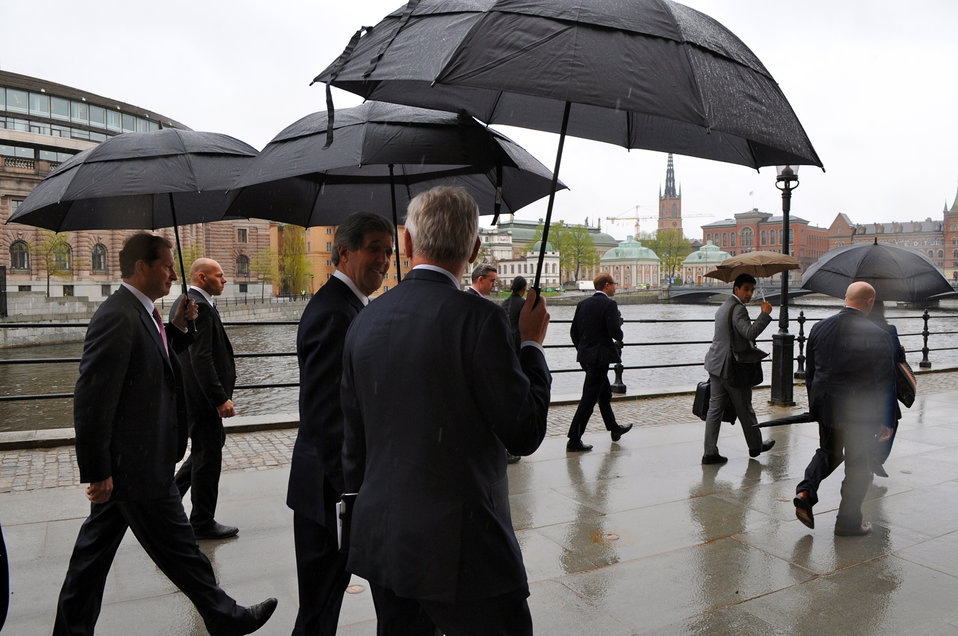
Secretary Kerry Walks to Swedish Prime Minister Reinfeldt's Office

Swedish Foreign Minister Carl Bildt, U.S. Secretary of State John Kerry, and U.S. Ambassador to Sweden Mark Brzezinski walk along the Strommen en route to a meeting with Swedish Prime Minister Fredrik Reinfeldt on May 14, 2013 in Stockholm, Sweden.